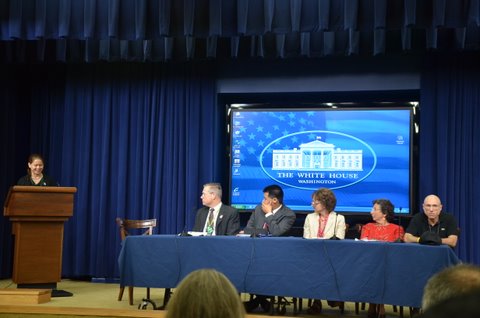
Corinna Dan

WH 2012 World Hepatitis Day Event